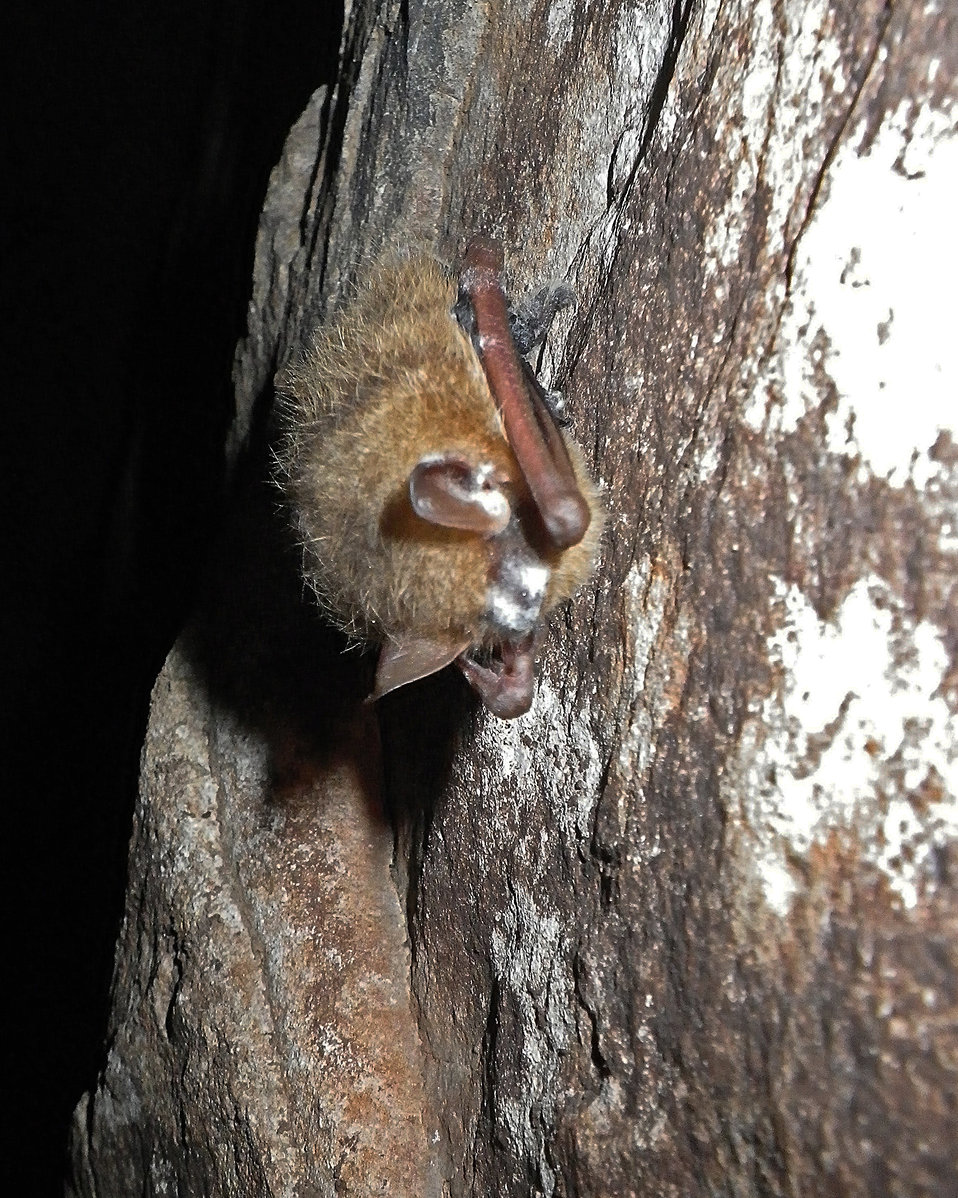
Infected tri-colored bat in Alabama

Infected tri-colored bat (Perimyotis subflavus) in Jackson County, Alabama cave